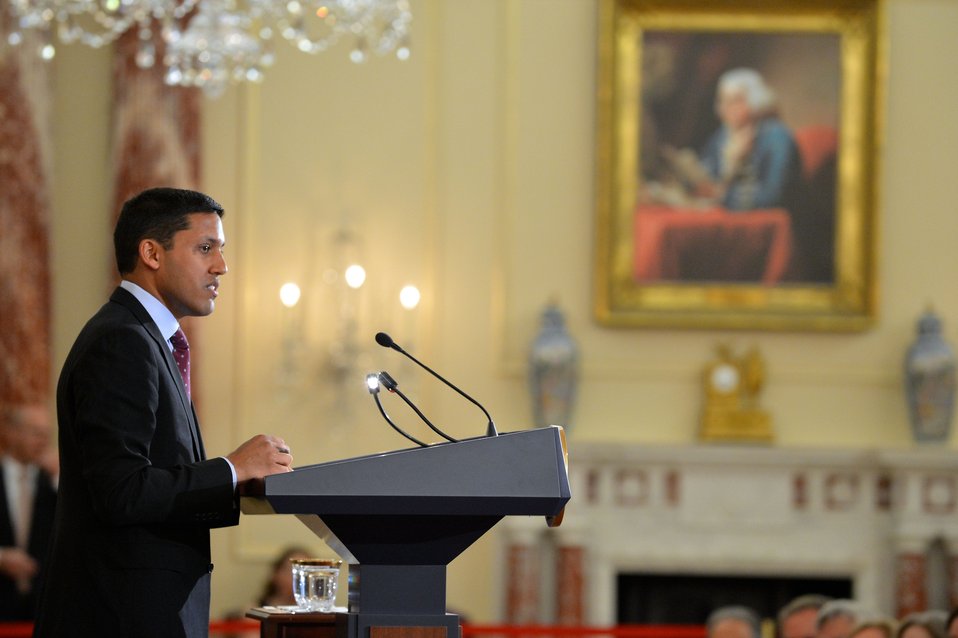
USAID Administrator Shah Delivers Remarks at the QDDR Launch

USAID Administrator Rajiv Shah delivers remarks at the public launch of the Department of State and U.S. Agency for International Development (USAID) review process for the second Quadrennial Diplomacy and Development Review (QDDR) at the U.S. Department of State in Washington, D.C., on April 22, 2014. Administrator Shah is joined by U.S. Secretary of State John Kerry, Deputy Secretary of State for Management and Resources Heather Higginbottom, and Special Representative for the QDDR Tom Perriello.